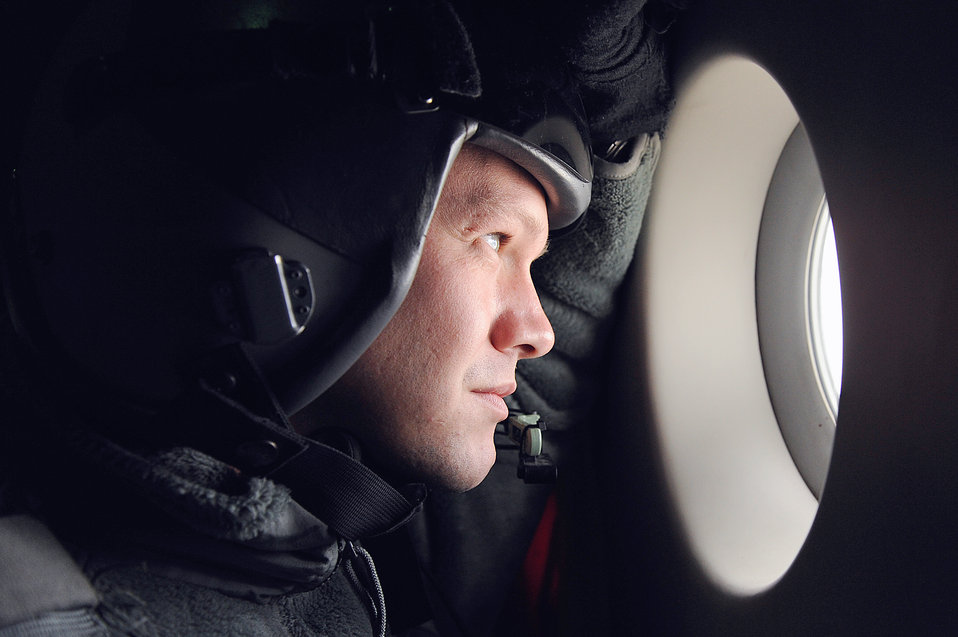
Hickam aircrew

Staff Sgt. Jason Jones looks out over the mountainous terrain of the Pacific Northwest during a training mission Nov. 13, 2010, at Joint Base Lewis-McChord, Wash. A C-17 Globemaster III aircrew from the 535th Airlift Squadron trained in unrestricted-descent assault landings, airdrop, combat offloads, air refueling, night-vision-goggle training, low levels, mountainous terrain, assault landings, threat responses and multiple-ship formation training. Sergeant Jones is a 535th AS loadmaster.